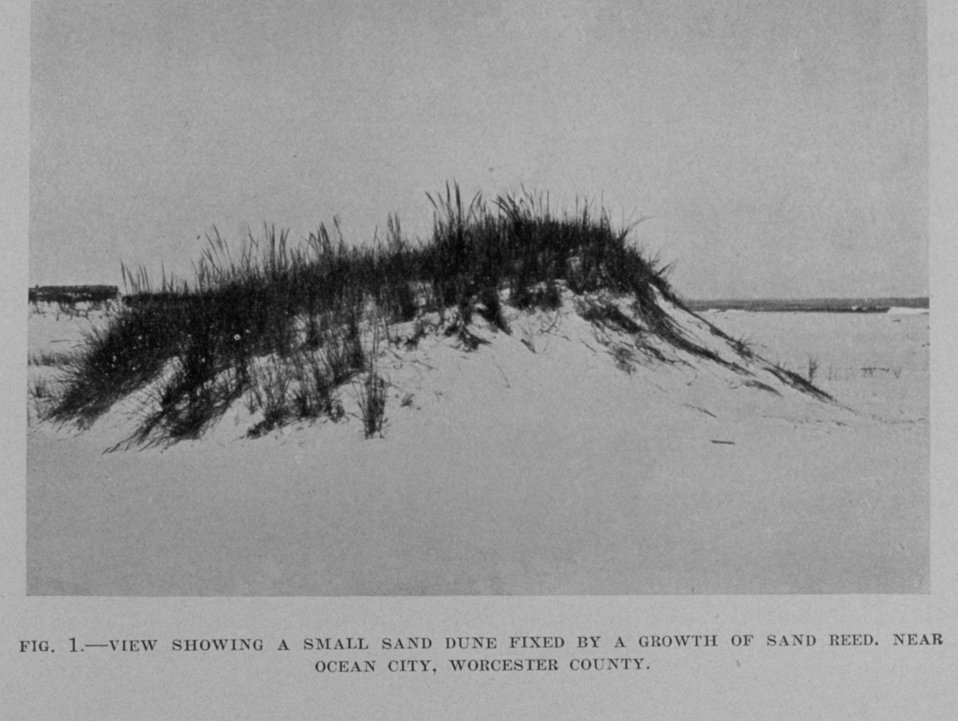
A small sand dune fixed by a growth of sand reed near Ocean City.